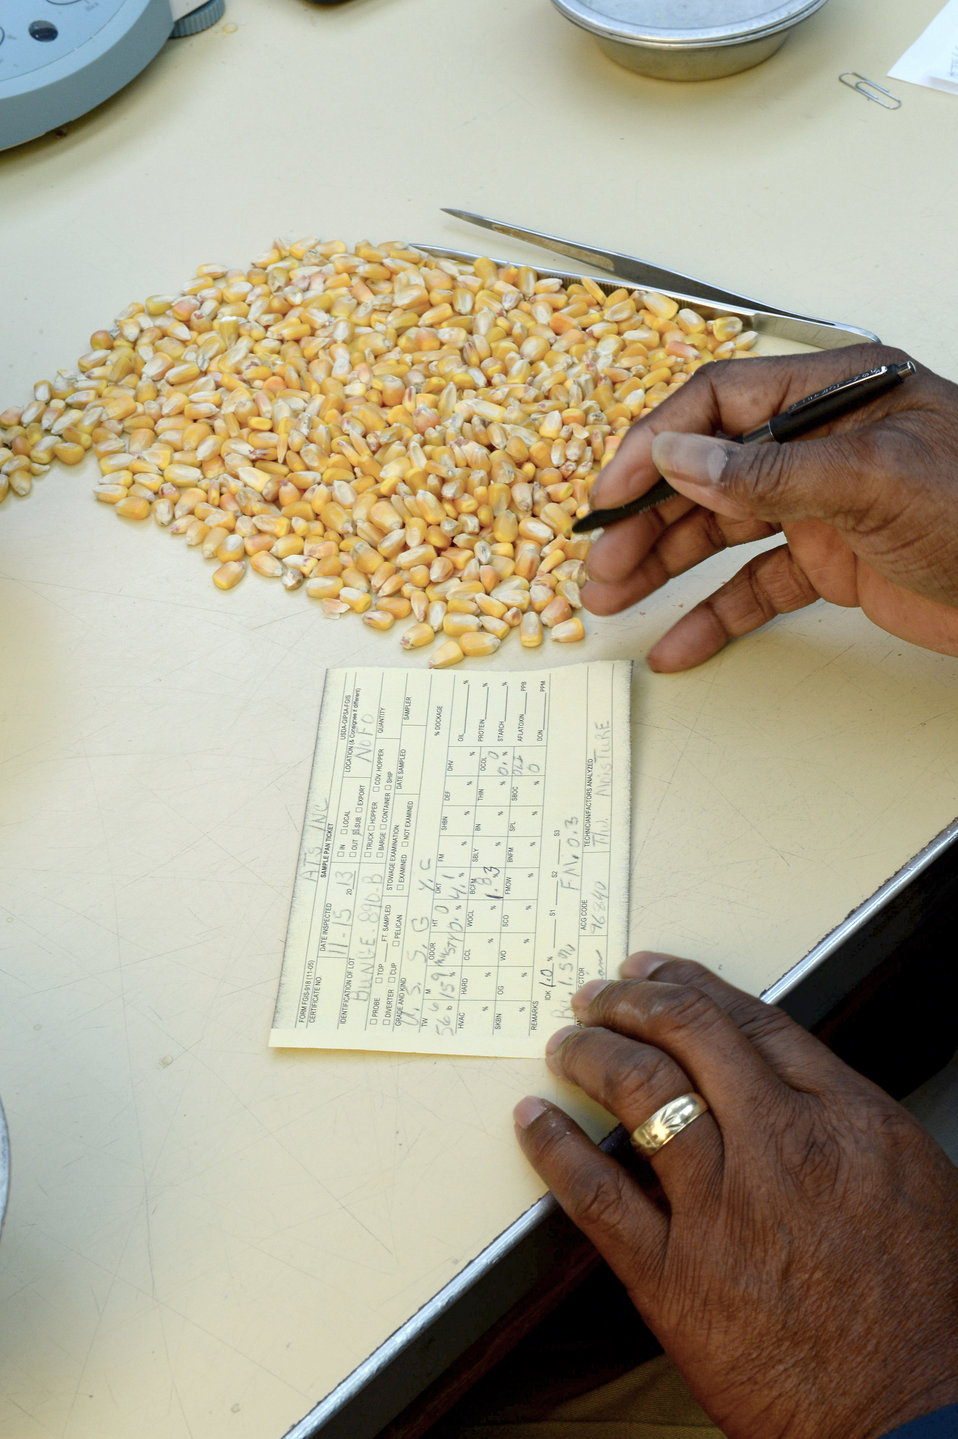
A U.S. Department of Agriculture (USDA) Grain Inspection, Packers and Stockyards Administration (GIPSA) Federal Grain Inspection Service (FGIS) scientist tests corn at the FGIS inspection laboratory in New Orleans, LA on Monday, Nov. 18, 2013.